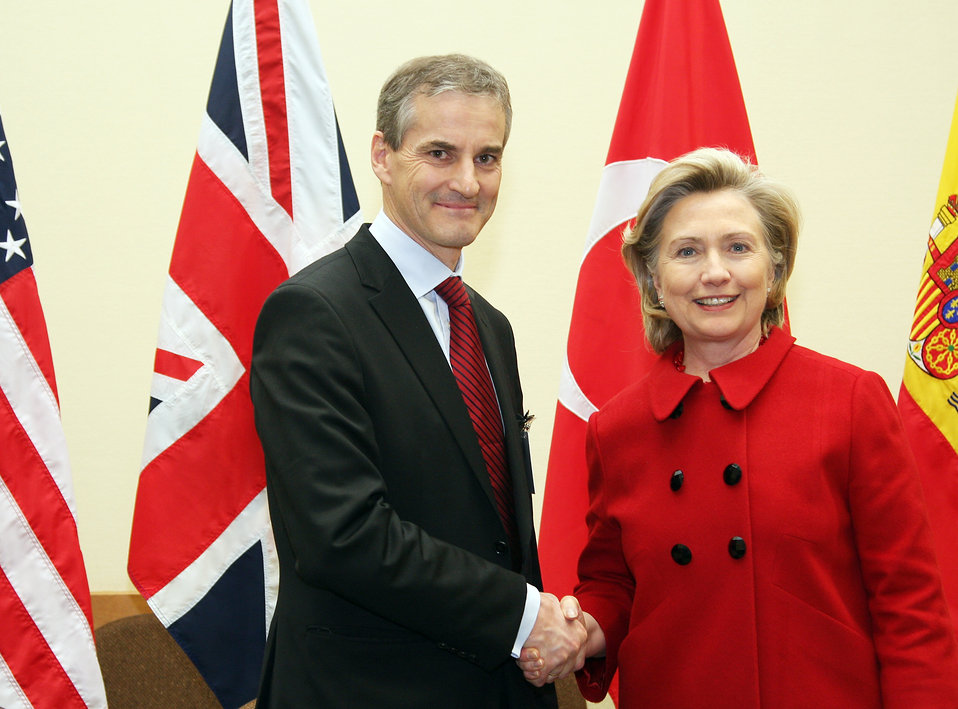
Secretary Clinton Meets With Norwegian Foreign Minister

U.S. Secretary of State Hillary Rodham Clinton holds a bilateral meeting with Norwegian Foreign Minster Jonas Gahr Stoere in Brussels, Belgium December 4, 2009.